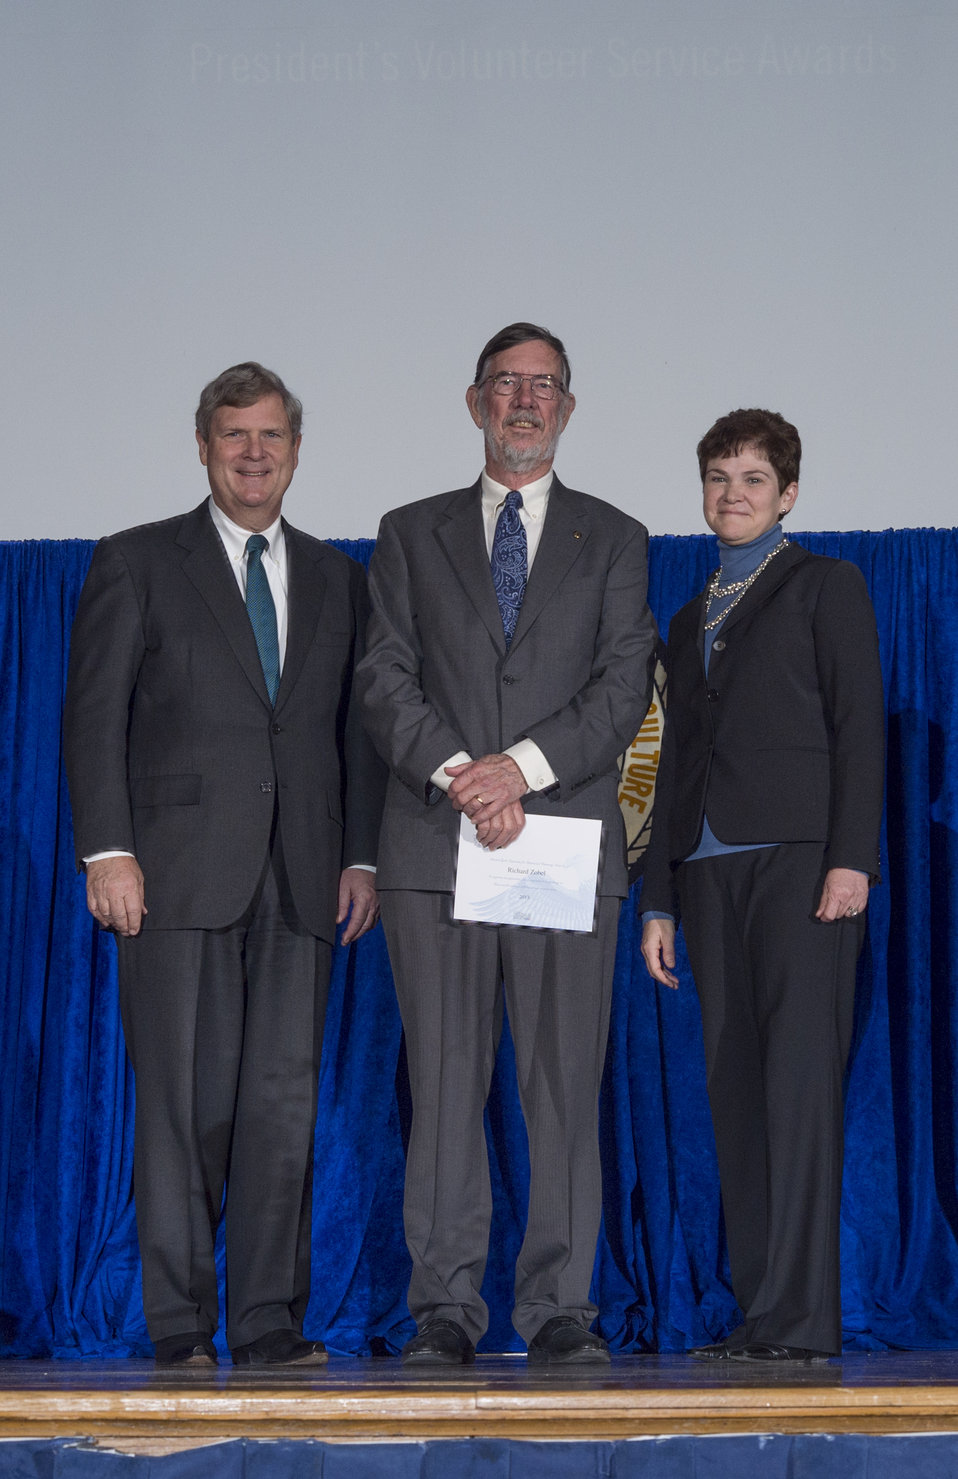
Agriculture Secretary Tom Vilsack and Agriculture Deputy Secretary Krysta Harden present the President’s Call to Service Award to Richard Zobel at the 2013 Secretary's Honor Awards in the Jefferson Auditorium at the U.S. Department of Agriculture (USDA) in Washington, D.C. on Wednesday, Dec. 11, 2013. The President’s Call to Service Award is given to an employee who has served 4,000 hours or more of service with a qualifying organization over the employee’s lifetime.